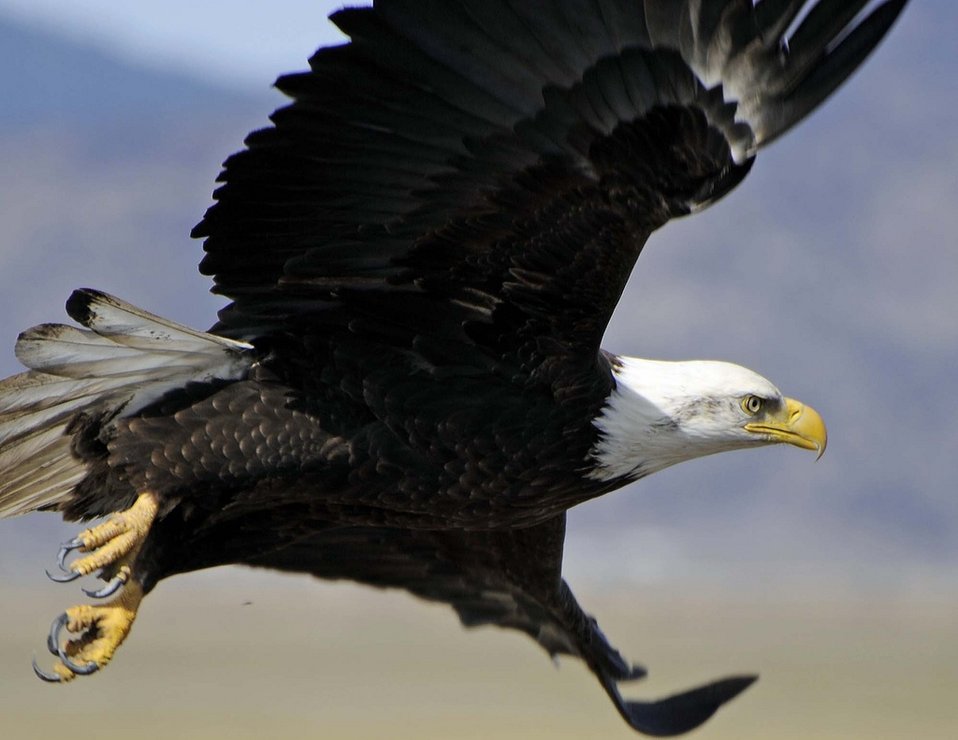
American Bald Eagle

An American bald eagle, once an endangered species, soars in majestic flight. Eagle-watching tours are popular with National Wildlife Refuge System visitors in January and February. (Photo: George Gentry/USFWS)

In April, 2012, the Service proposed changes in some regulations under the Bald and Golden Eagle Protection Act in order to facilitate development of renewable energy.